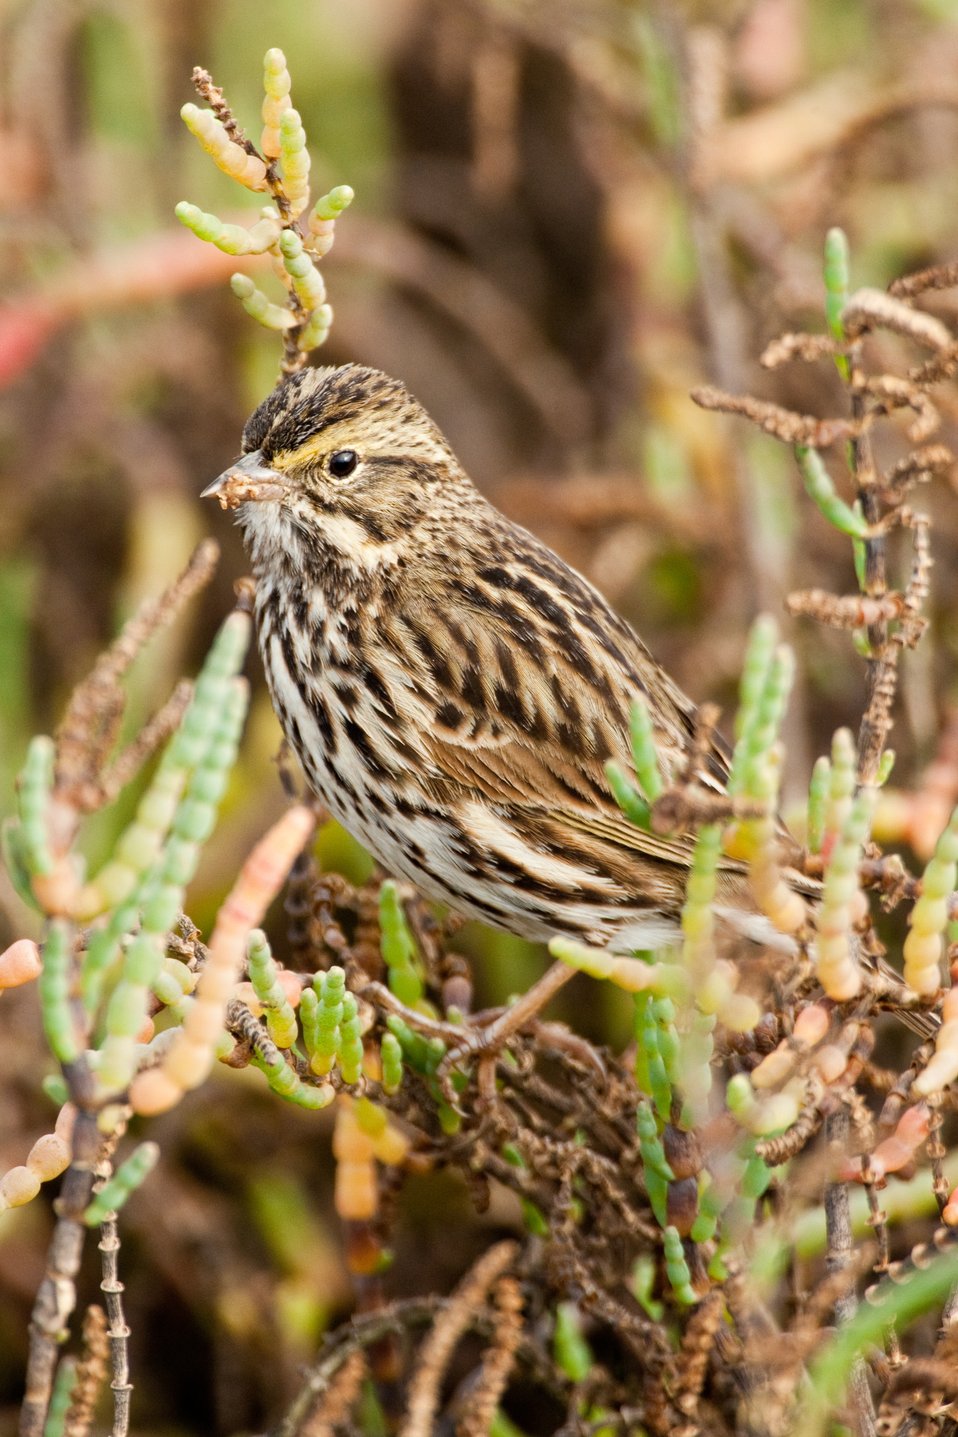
Belding's Savannah sparrow (adult)

The Belding's is very similar to the large-billed sparrow populations, however it has darker and heavier blackish streaking overall. It is a State Endangered bird, and frequents the marshes of both the Tijuana Slough NWR and San Diego Bay NWR.